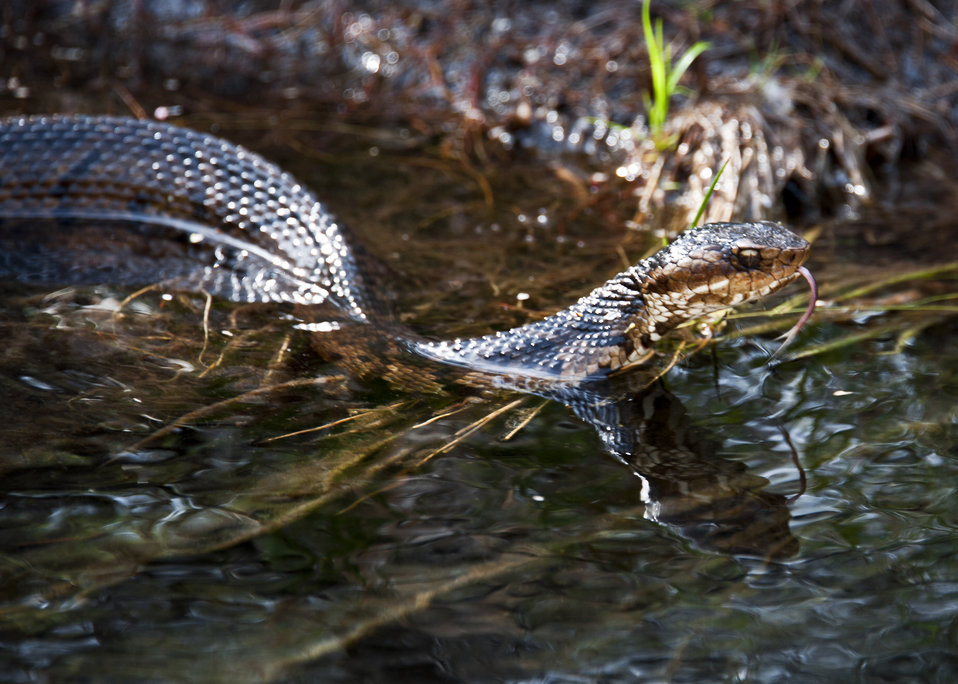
Earth Day Kayak Tour

A water moccasin glides into the water April 21, 2011, at Eglin Air Force Base, Fla.